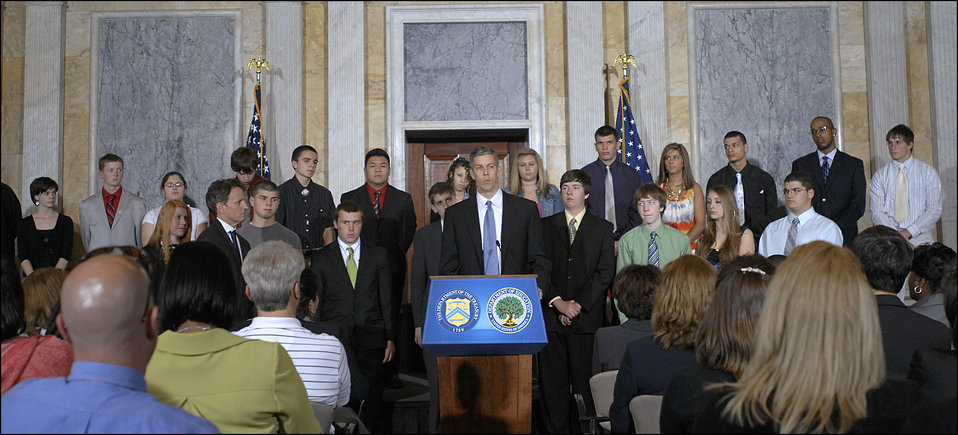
National Financial Capability Challenge, 4/28/10

Education Secretary Arne Duncan recognizing high scoring students in the National Financial Capability Challenge.